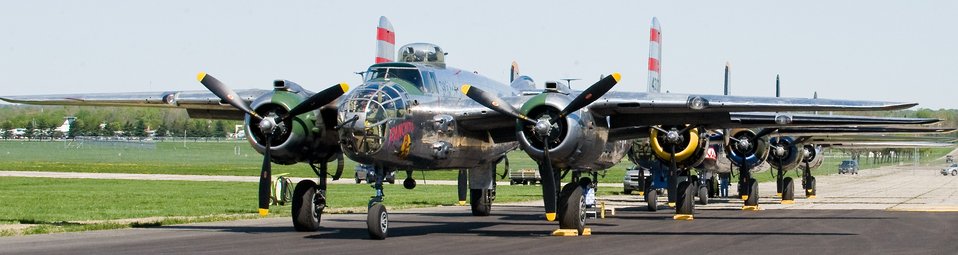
68th Reunion of Doolittle Raiders Flyover

B-25 Mitchell bombers at the National Museum of the U.S. Air Force at Wright-Patterson Air Force Base, Ohio await their crews preparation for a formation flyover prior to the Doolittle Raiders Memorial Service in the museum's Memorial Park on April 18, 2010. This is one of the largest gatherings of the Mitchell Bombers since the historic raid over Tokyo, Japan during World War II.